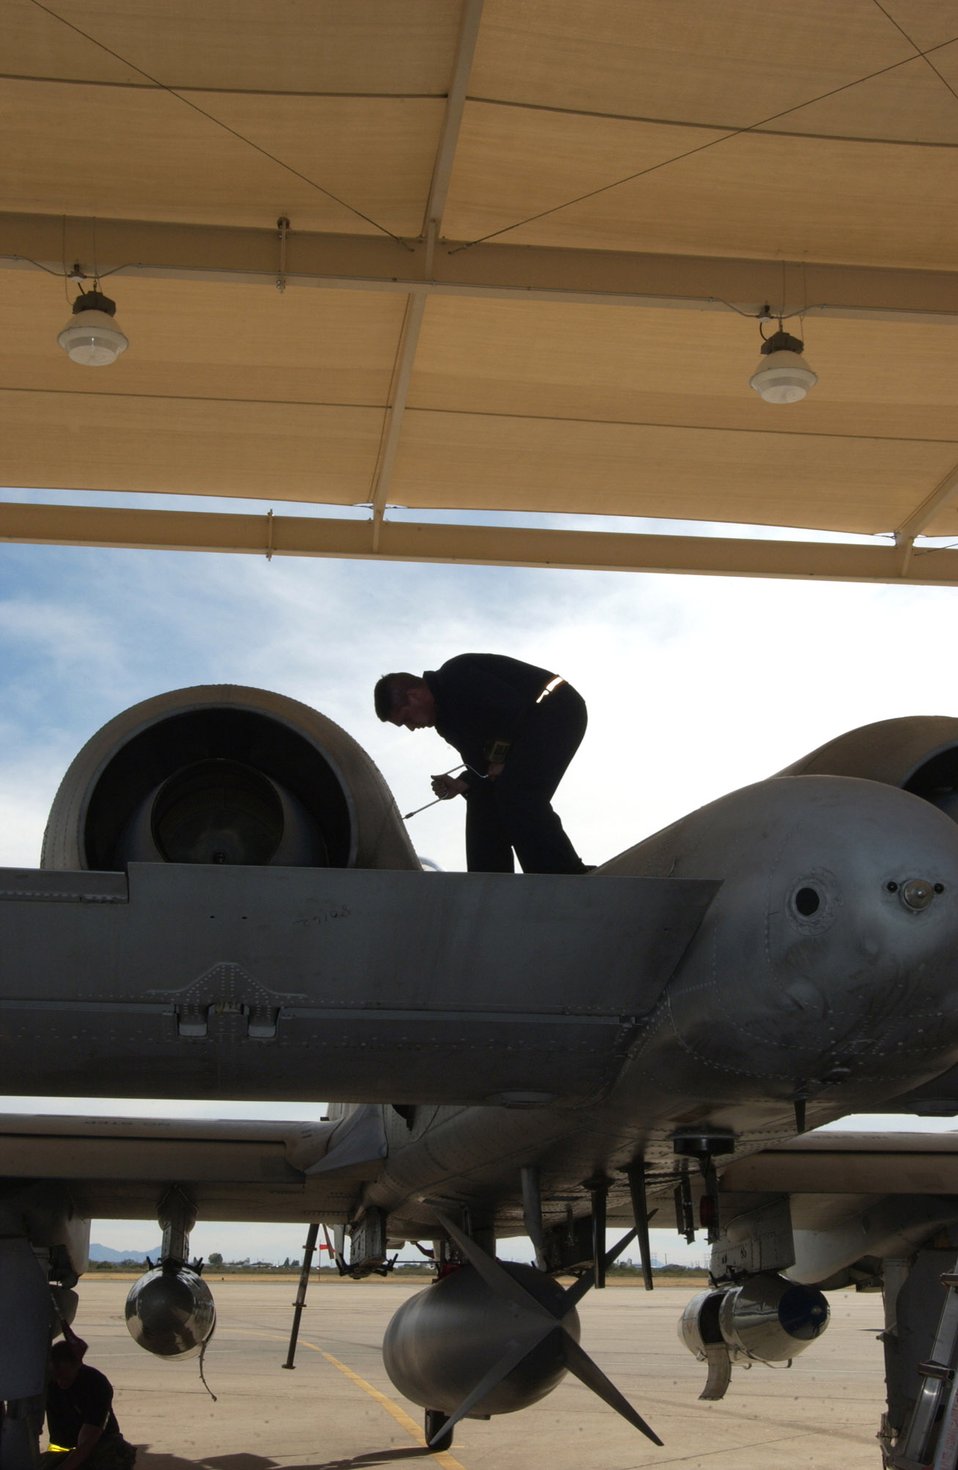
This A-10's getting ready to roll

Staff Sergeant Astolfo Mercado closes a panel on an A-10 Thunderbolt II Oct. 28 on the flightline of Davis-Monthan Air Force Base, Ariz. Sergeant Mercado is a crew chief from the 355th Aircraft Maintenance Squadron.